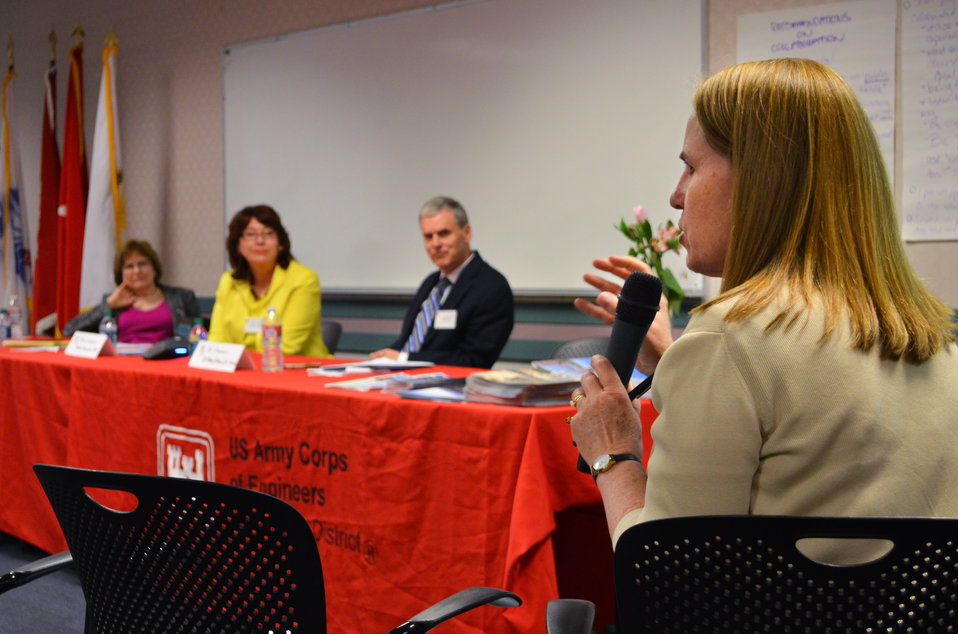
South Pacific Division’s collaboration summit in Sacramento, Calif., April 7, 2014

Marcy DuPraw (right), senior facilitator at the Center for Collaborative Policy, takes a question at the U.S. Army Corps of Engineers South Pacific Division’s collaboration summit in Sacramento, Calif., April 7, 2014. Representatives from the California Water Education Foundation, Friends of the River, Center for Collaborative Policy and other partners joined Corps staff for panel discussions on how collaboration and communication on Corps projects can be improved and how we can all better engage members of the public in our project planning process.